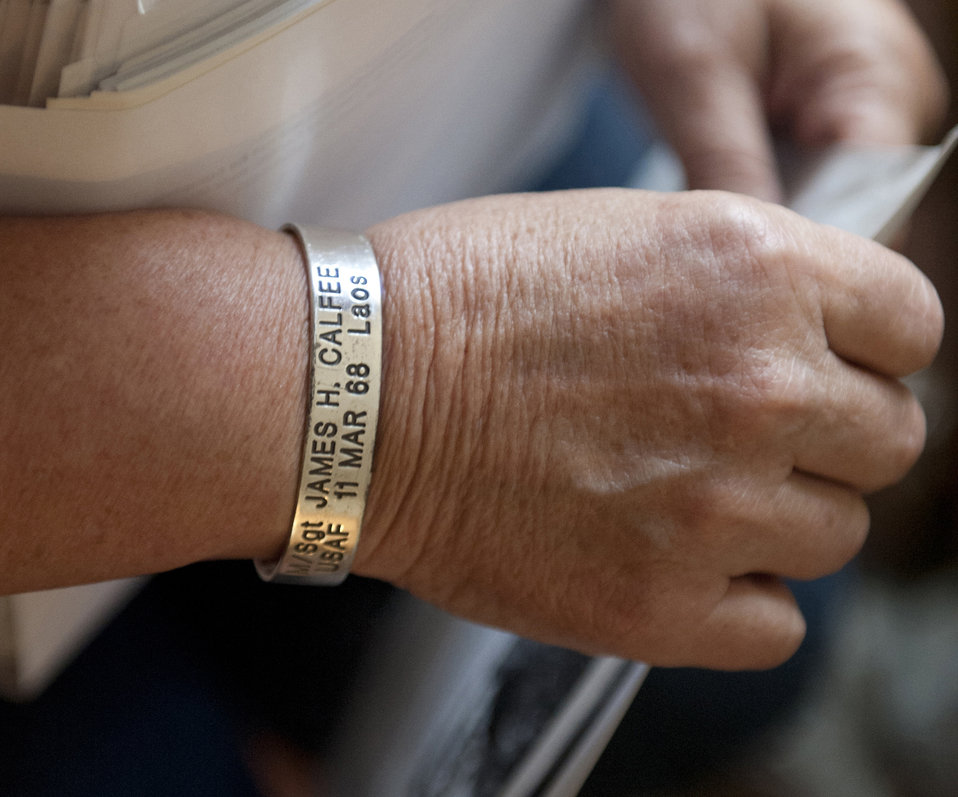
Silver Star hero

Debra Morris, a niece of U.S. Air Force Master Sgt. James Calfee, wears a Vietnam War POW/MIA bracelet in honor of her late uncle in Houston, Texas, Aug. 22, 2012. Calfee was killed in action in Laos in 1968.